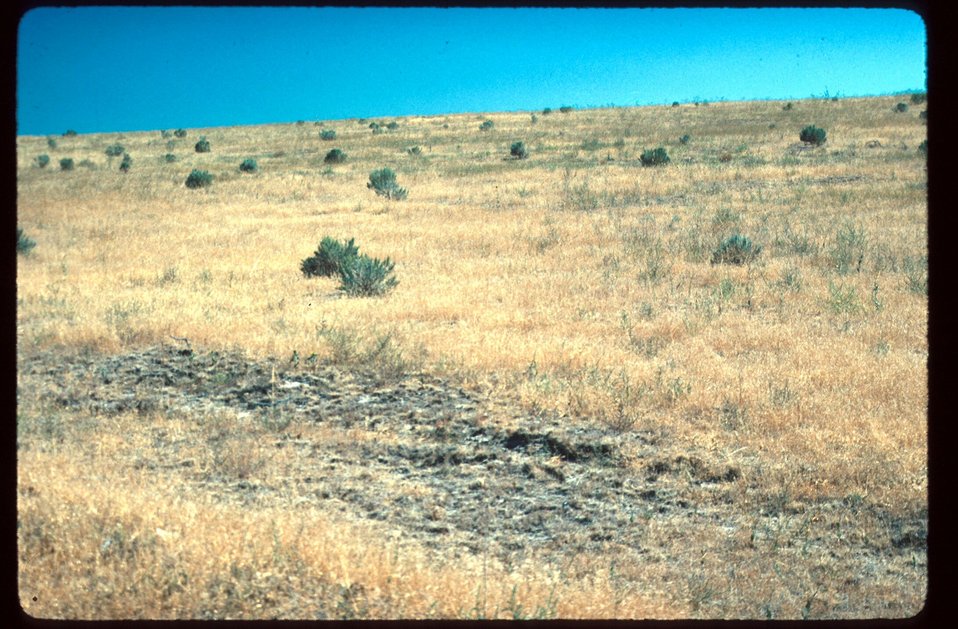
Mtn. Home Range Restoration Project